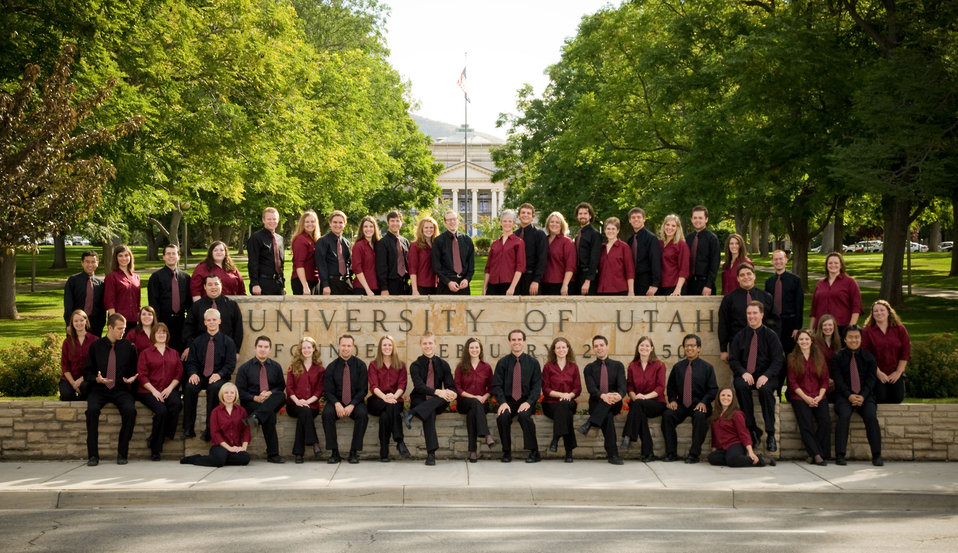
University of Utah Singers